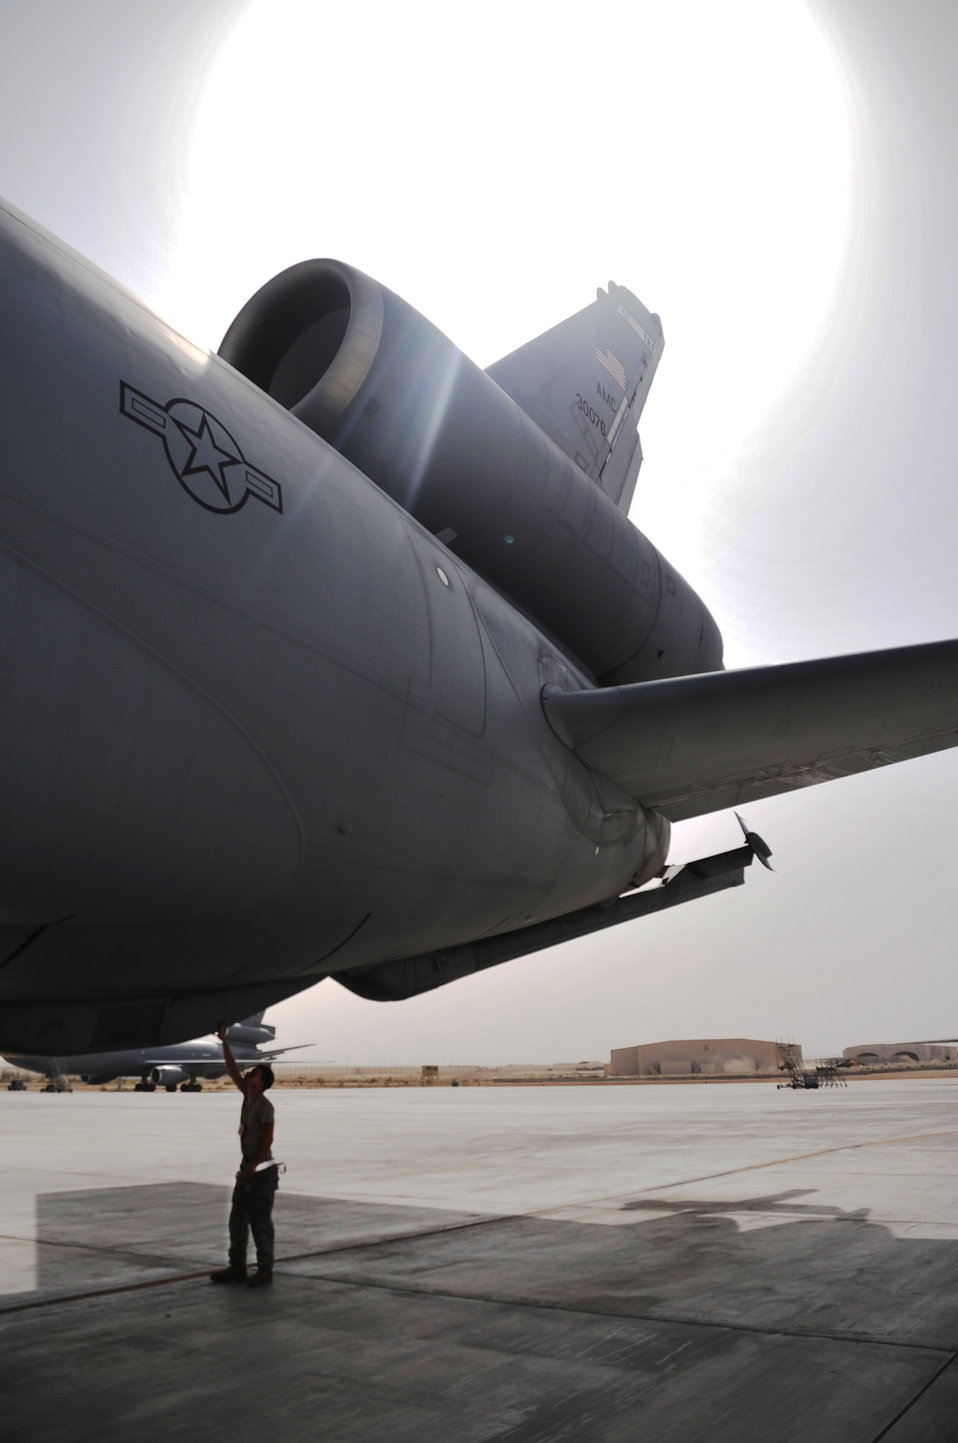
Checking things out from top to bottom

Airman 1st Class Brian Welch checks over a KC-10 Extender April 24, 2010, during operations at an air base in Southwest Asia. Airman Welch is a crew chief with the 380th Expeditionary Aircraft Maintenance Squadron.